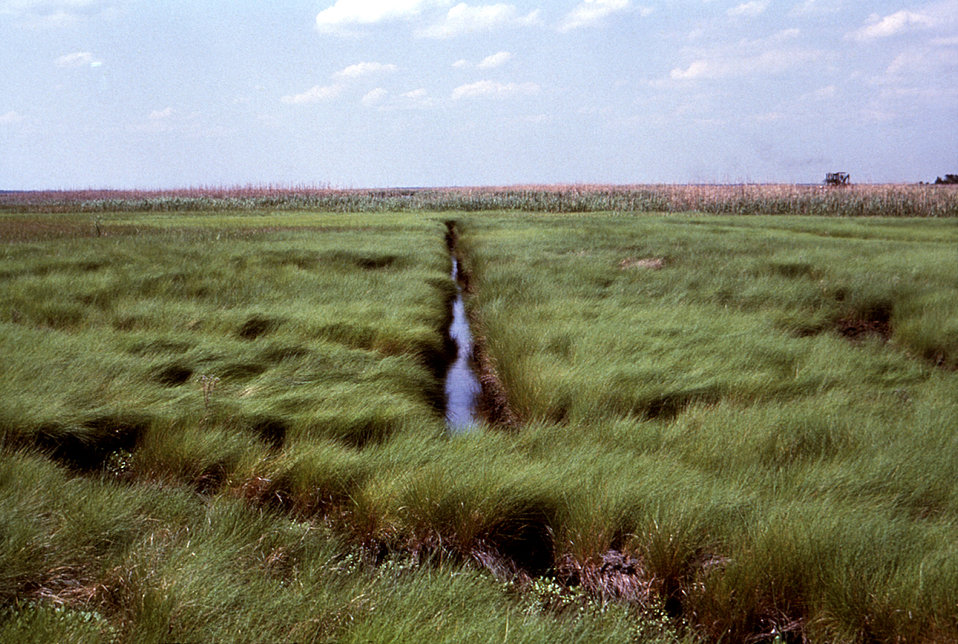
This 'Saltmeadow Cordgrass', Spartina patens, watery marsh was traversed by a network of drainage ditches such as the 4 year old ditch depicted here in this photograph, which had been excavated by an amphibious rotary ditcher (ARD).